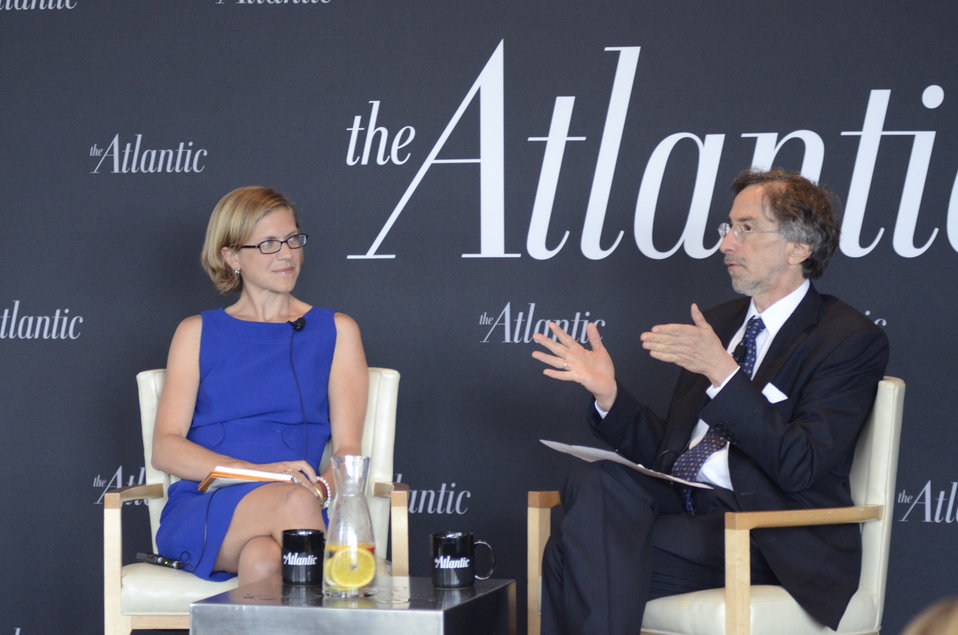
The Atlantic Senior Editor Corby Kummer interviews Co-Founder and Chief Innovation Officer, Revolution Foods Kirsten Tobey Batali at the 3rd Annual Food Summit held at the W Hotel in Washington, D.C. on Thursday, May 24, 2012. The Food Summit event includes interviews, panel discussions and symposia with leading authorities on issues related to food, food security, and nutrition.